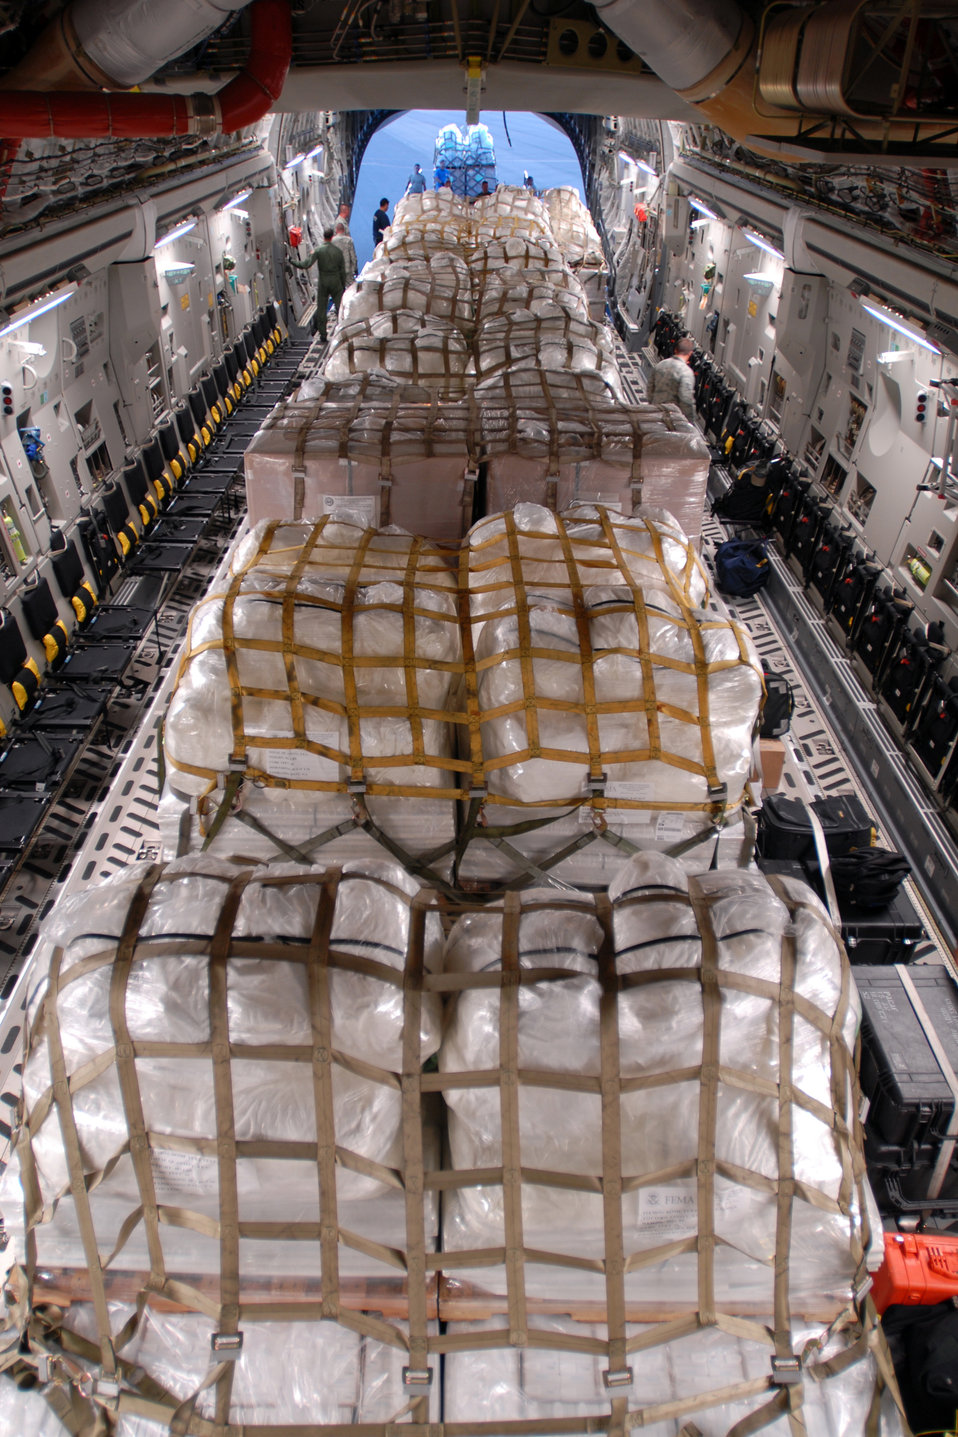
Humanitarian aid bound for tsunami relief effort

Humanitarian aid supplies from the Federal Emergency Management Agency is loaded by Hawaii Air National Guard, Hawaii National Guard and Hickam Air Force Base active-duty Airmen into a C-17 Globemaster III bound for American Samoa to assist in the relief efforts under way Sept. 30, 2009, at Hickam AFB, Hawaii. The efforts are in the wake of tsunamis triggered by an undersea earthquake Sept. 29 that has left more than 140 people dead in the South Pacific region. More than 90 Airmen and Soldiers deployed from Hawaii for the humanitarian mission.